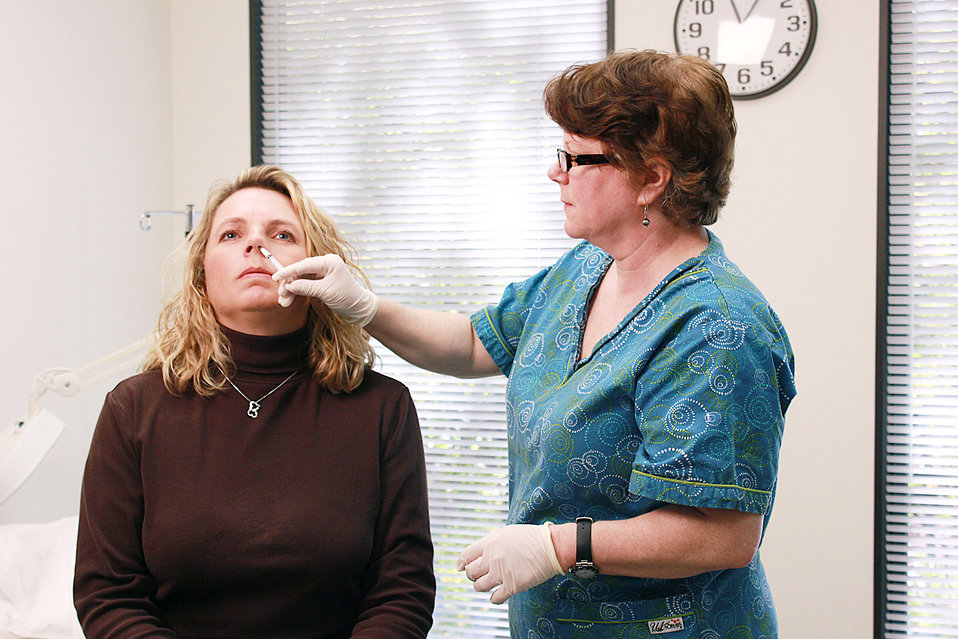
This image depicts a qualified nurse in a clinical setting, who was in the process of administering a dosage of FluMist� live attenuated intranasal vaccine LAIV) into the left nostril, and into this patient's nasal cavity. Note that the nurse's hands were gloved, thereby, avoiding the possibility of cross-contamination.